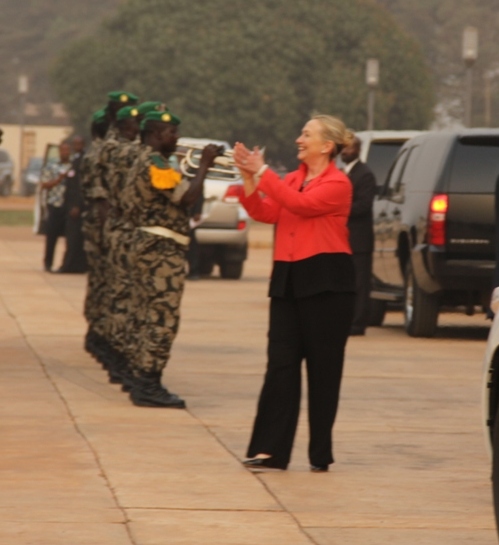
Secretary Clinton Applauds Dancers

U.S. Secretary of State Hillary Rodham Clinton applauds dancers outside of the Presidential Palace in Lome, Togo, on January 17, 2012.